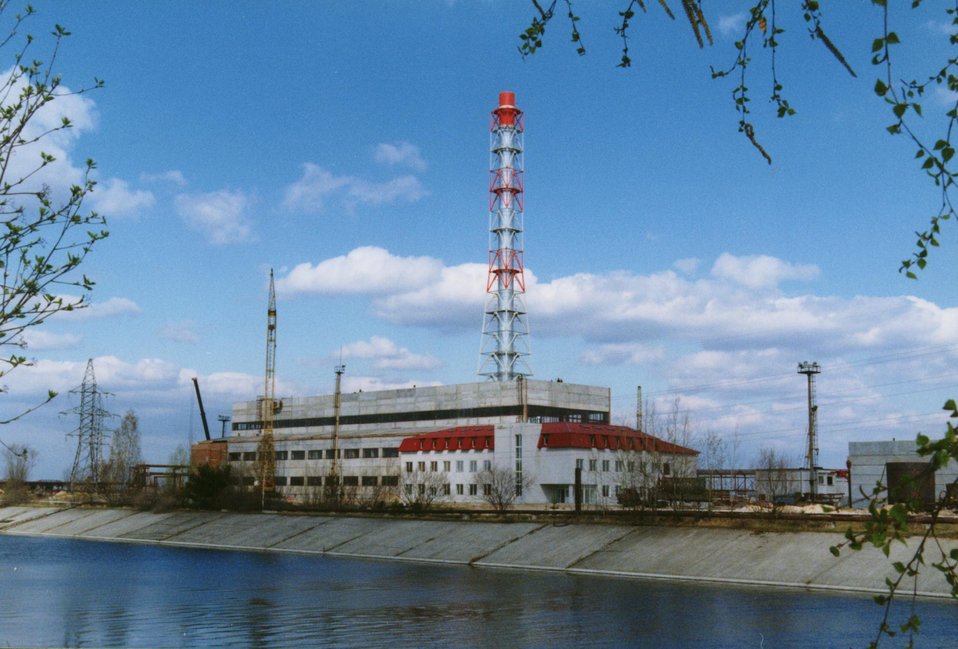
To meet the U.S. Department of Energy requirements at the Chernobyl Nuclear Power Plant, the Pacific Northwest National Laboratory provided leadership in building the Chernobyl Heat Plant in 2001.

The plant provided the heat necessary to safety maintain plant systems for decommissioning activities.